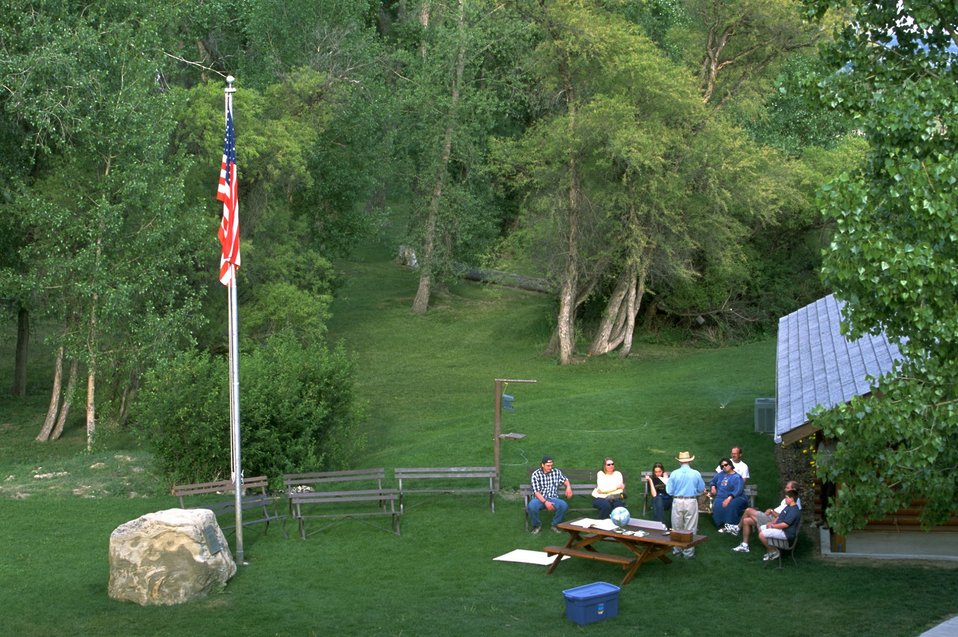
View from the boardwalk of the interpretive program at the Visitors Center at Pompeys Pillar